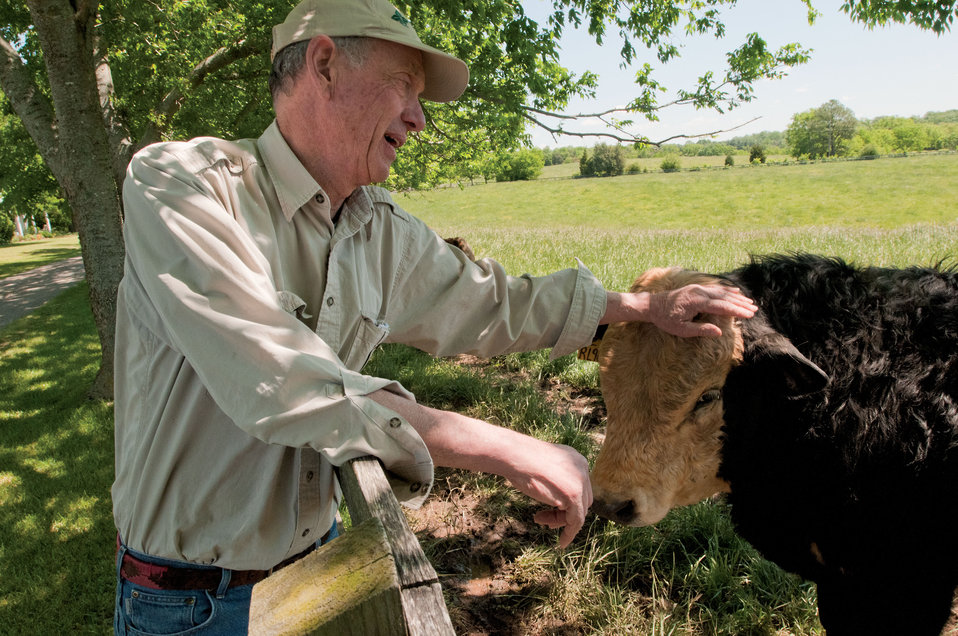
Sandy Fisher, co-owner of Brookview Farm in Manakin-Sabot, VA, on Thursday, May 5, 2011 enjoys being a rancher that supplies beef to Fall Line Farms a local food cooperative in the Richmond, VA area that offers a wide variety of household food staples and specialty items on an ever changing inventory of fruits, vegetables, meats, soaps, eggs, cheeses, flowers, honey, pastas, sauces, syrups, baked goods, mushrooms, flour and grains. Suppliers post what they have on a Lulus Local Food online listing and customers can make their selection. Every Thursday suppliers deliver orders to, one of several pick-up points, designated by the customers in or around the Richmond area.